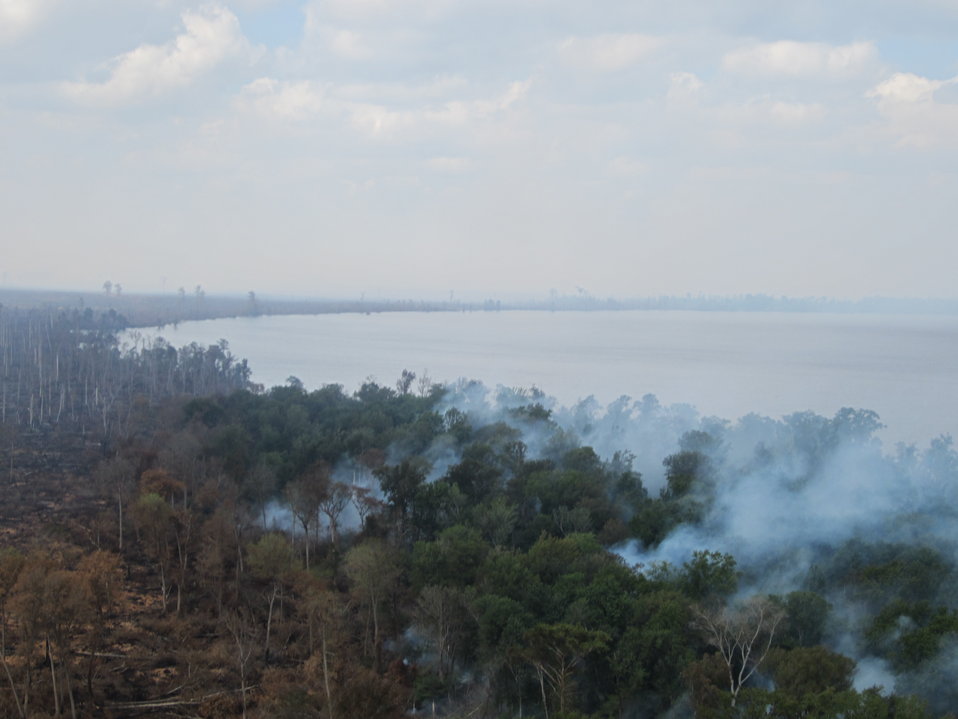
Burning around Lake Drummond

Suffolk, VA, August 2011: The Lateral West Fire burned along the western and southern perimeter of Lake Drummond on Great Dismal Swamp National Widlife Refuge..